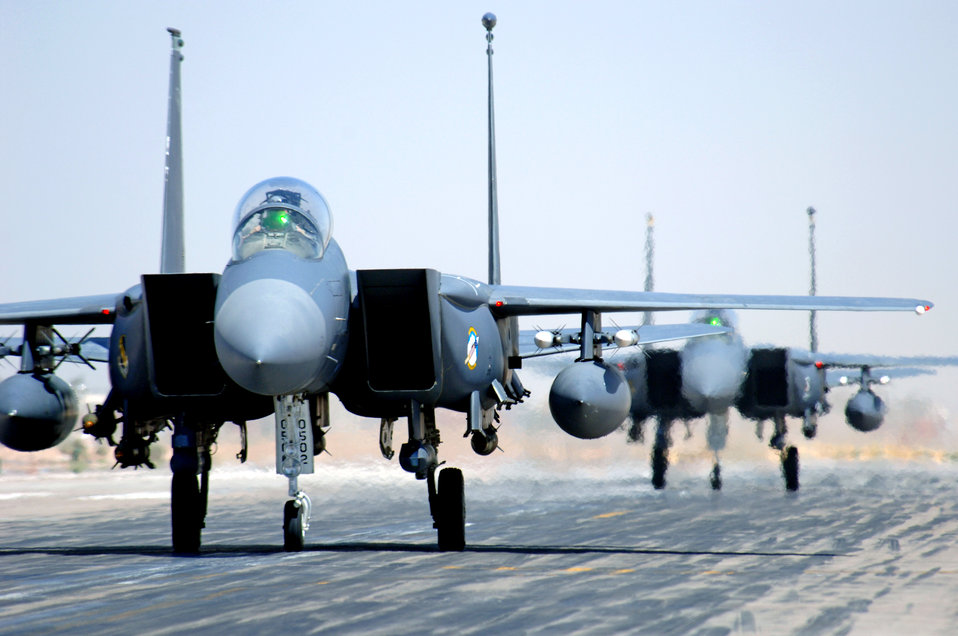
Flying missions support Operation Iraqi Freedom

F-15E Strike Eagles taxi at Balad Air Base, Iraq, after an Operation Iraqi Freedom mission on Monday, June 12. The aircraft are deployed from Seymour Johnson Air Force Base, N.C.